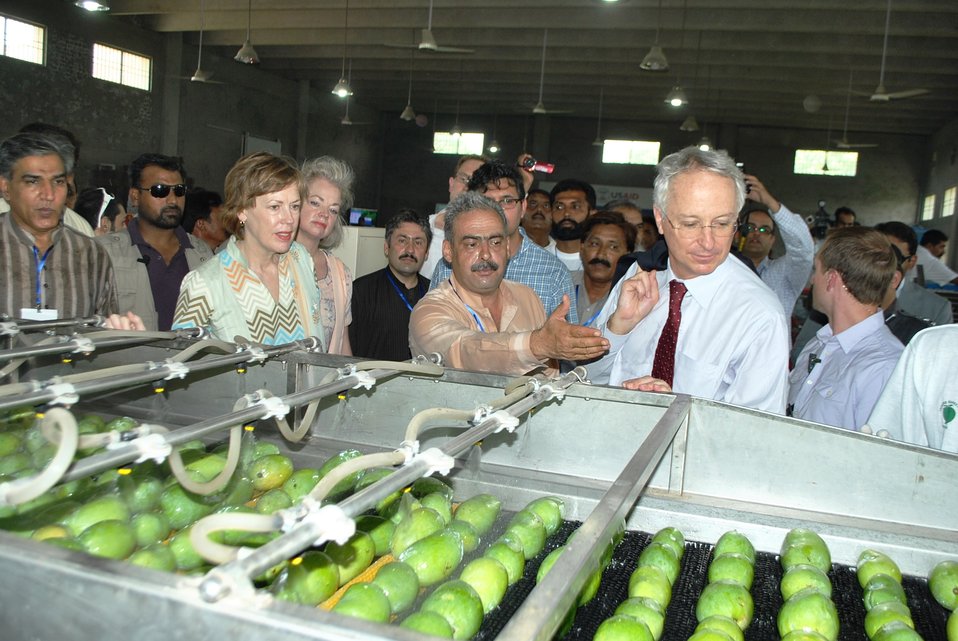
U.S. Helps Pakistani Farmers Export Mangos

Multan, July 24, 2011 - U.S. Ambassador Cameron Munter inaugurated a new U.S.-funded mango processing line at Lutfabad Farm. As a result of U.S-provided infrastructure upgrades, 13 farms in Southern Punjab will be able to export delicious Pakistani mangos to foreign markets. The U.S. partnership with mango producers is expected to yield a 30 million dollar increase in mango export revenue in the next two years, three million dollars of new investment, and 6,000 new jobs in Punjab and Sindh.